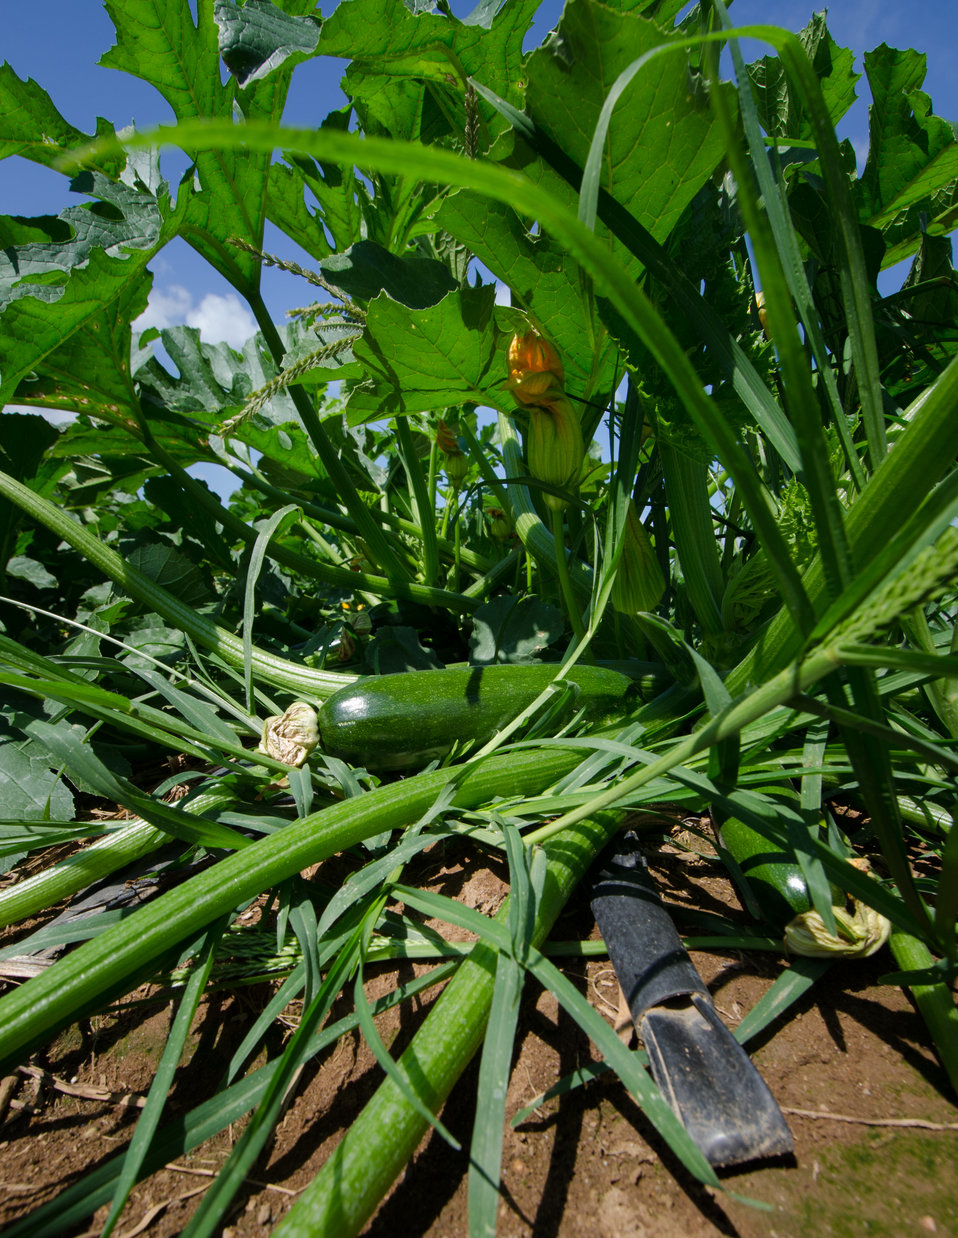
Kirby Farms third-generation family farm in Mechanicsville, VA, uses micro irrigation (drip watering) and plastic mulch (row covering) to efficiently grow green zucchini squash, on Friday, Sept 20, 2013. Water is pumped through a filtration/regulator system to flexible distribution pipes and hard connectors. Emitter hoses can be driven in where needed. Pressurized hoses emit water at a very slow rate near the base of the plants. Computers or timers provide additional controls. A micro irrigation system, also known as drip or trickle irrigation, is used to water directly to the plant root zone utilizing surface or subsurface applicators. For more information please see www.nrcs.usda.gov/Internet/FSE DOCUMENTS/nrcs141p2 024038...
Plastic sheeting is a form of mulch. It conserves soil moisture and reduces energy
use associated with irrigation, moderates soil temperature, provide erosion control, suppresses weed growth, facilitates the establishment of vegetative cover, improves soil quality, and reduces airborne particulates.